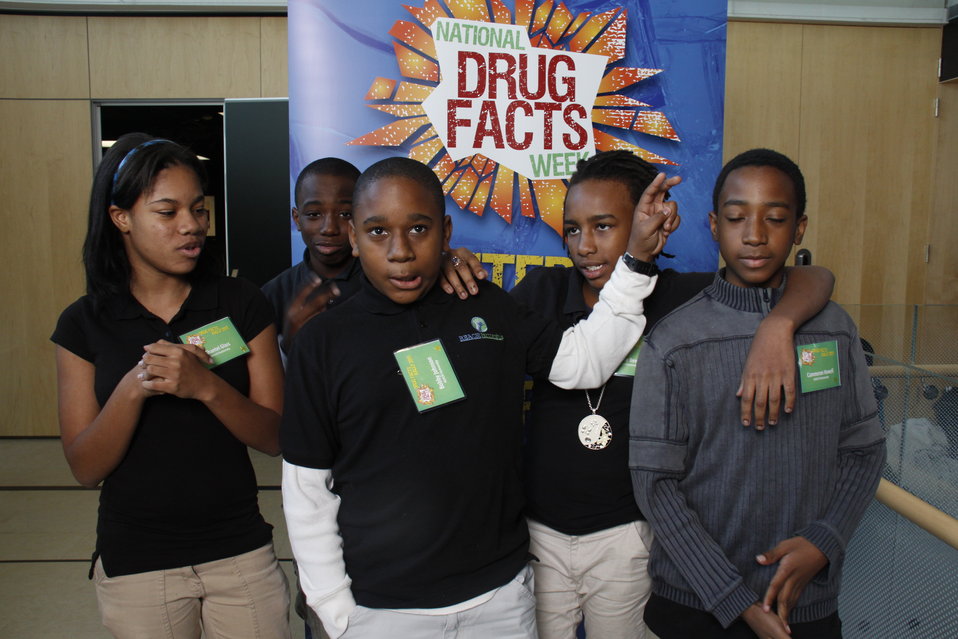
NDFW Mentor Event